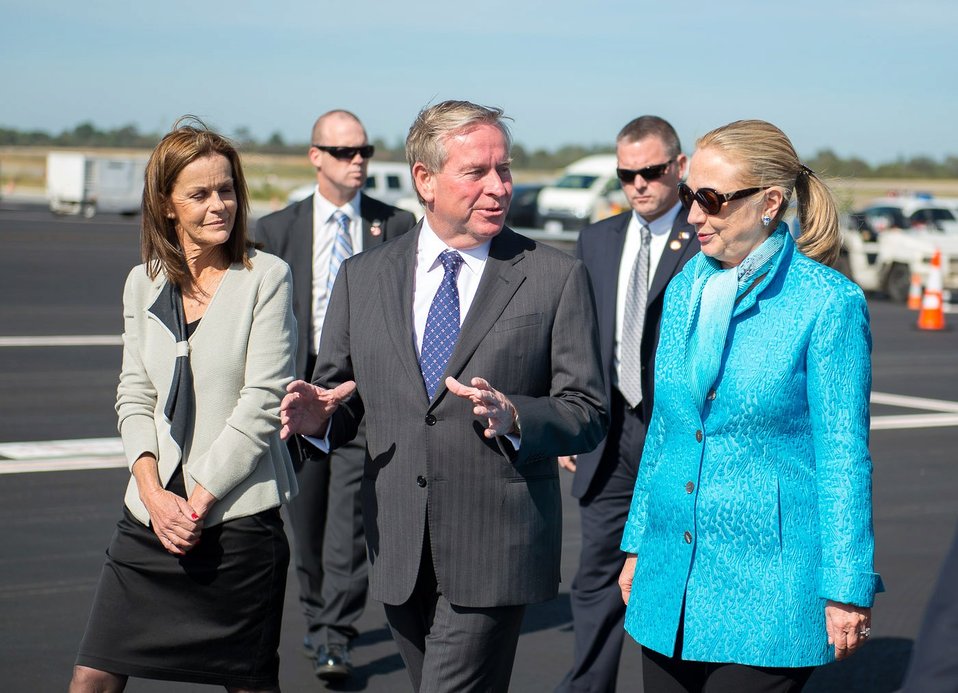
Secretary Clinton Speaks With Western Australia Premier Barnett

U.S. Secretary of State Hillary Rodham Clinton speaks with Western Australia Premier Colin Barnett upon arriving in Perth, Australia, November 12, 2012. [U.S. Embassy in Canberra, Australia photo by Travis Longmore/ Public Domain]